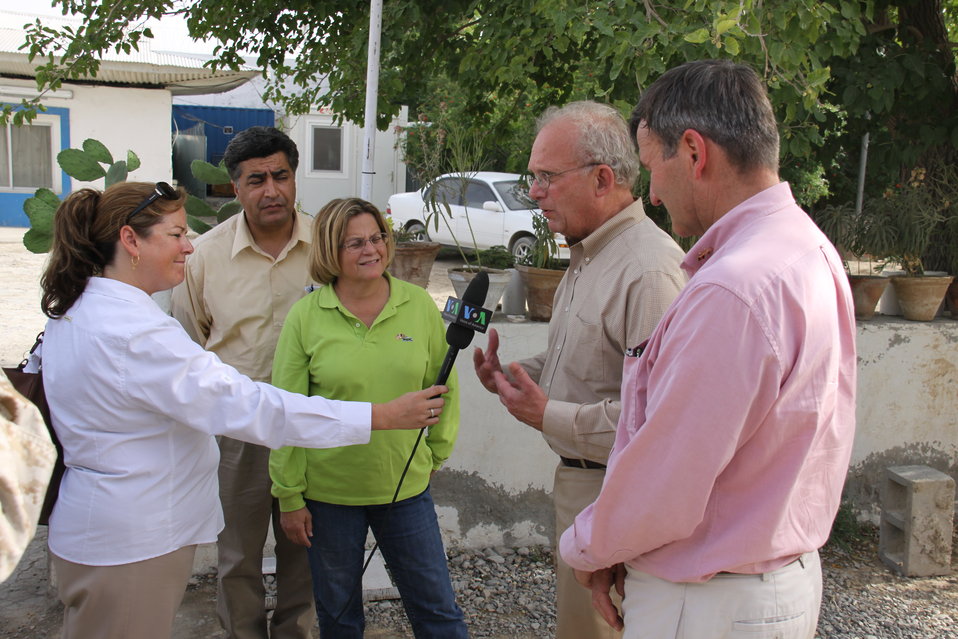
Meeting with Local Leaders in Kandahar